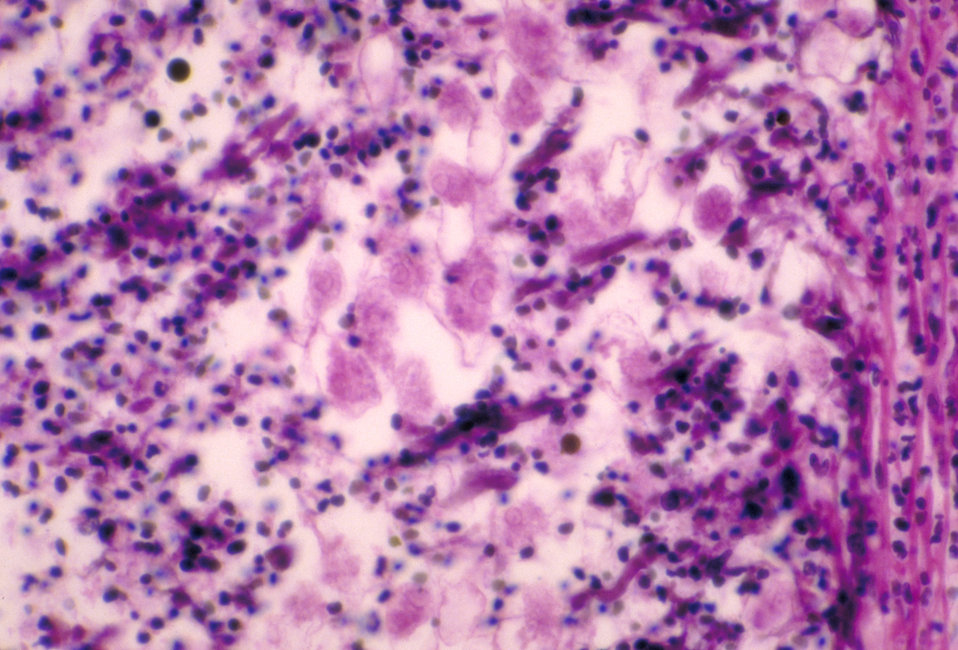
This photomicrograph depicts the histopathologic characteristics of found in an intestinal ulcer, occupied by numbers of parasitic Entamoeba histolytica trophozoite-staged amoebae.